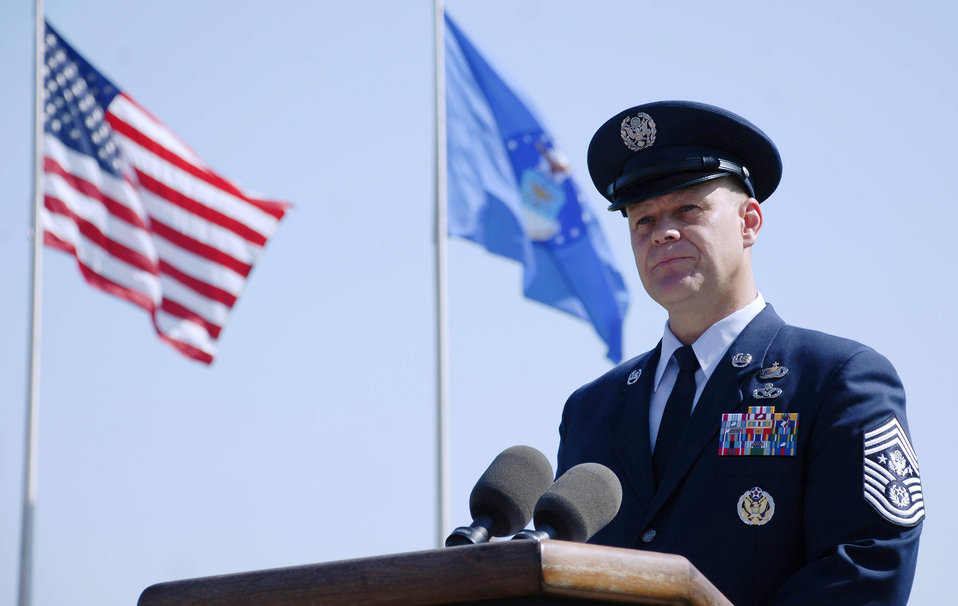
Air Force officials bid farewell to Chief McKinley, welcomes Chief Roy

Chief Master Sgt. of the Air Force James A. Roy gives a speech during the retirement ceremony for Chief Master Sgt. of the Air Force Rodney J. McKinley June 30 at Bolling Air Force Base, D.C. With Chief McKinley's retirement, Chief Roy is appointed the 16th chief master sergeant of the Air Force.